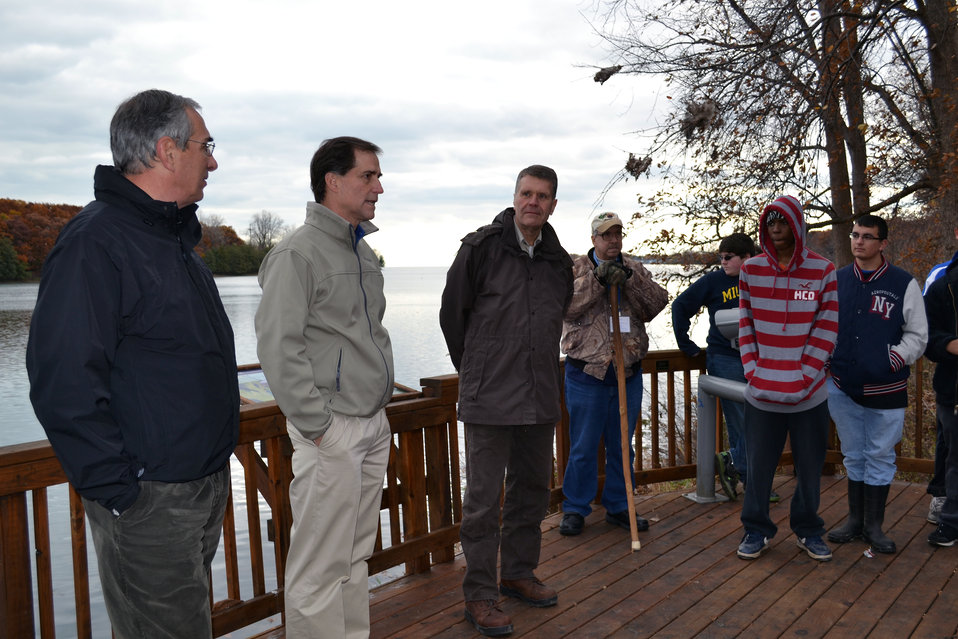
Discussing Conservation Futures

Regional Director Tom Melius and Director Dan Ashe join Detroit River International Wildlife Refuge Manager Dr. John Hartig discusses conservation careers with students from Carlson High School.